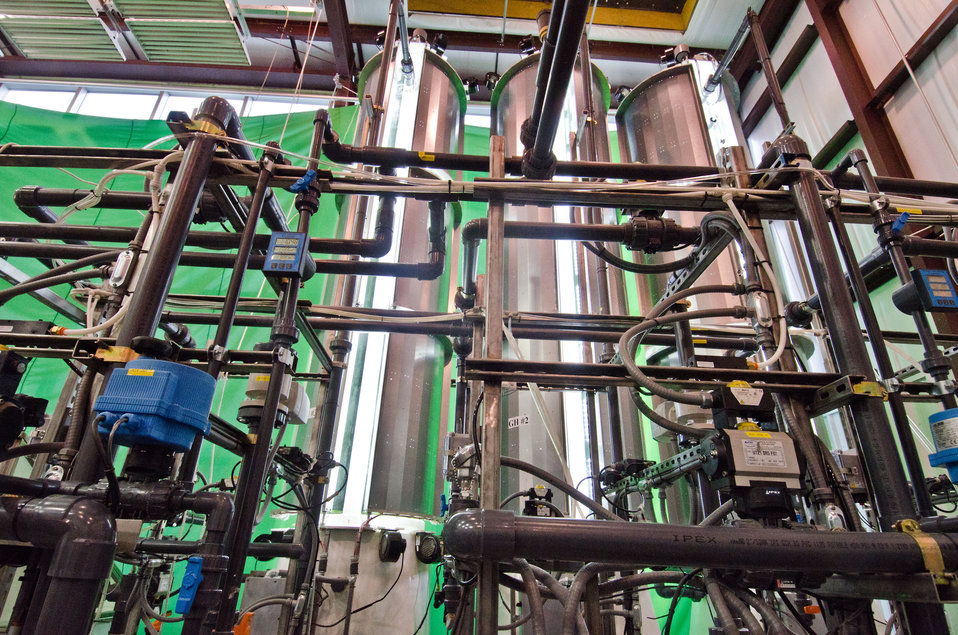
Phase II of the BioProcess Algae facility at Green Plains Renewable Energy (GPRE), Inc. on Friday, April 15, 2011 in Shenandoah, IA. Phase II is key component in the commercial scale photo bioreactors/harvesters. The operation is co-located within GPRE’s ethanol factory where BioProcess Algae technology is used to treat waste products; carbon dioxide, recycled heat and water to mass-produce algae. Algae from this facility are used for animal feeds, pharmaceutical and beauty products.